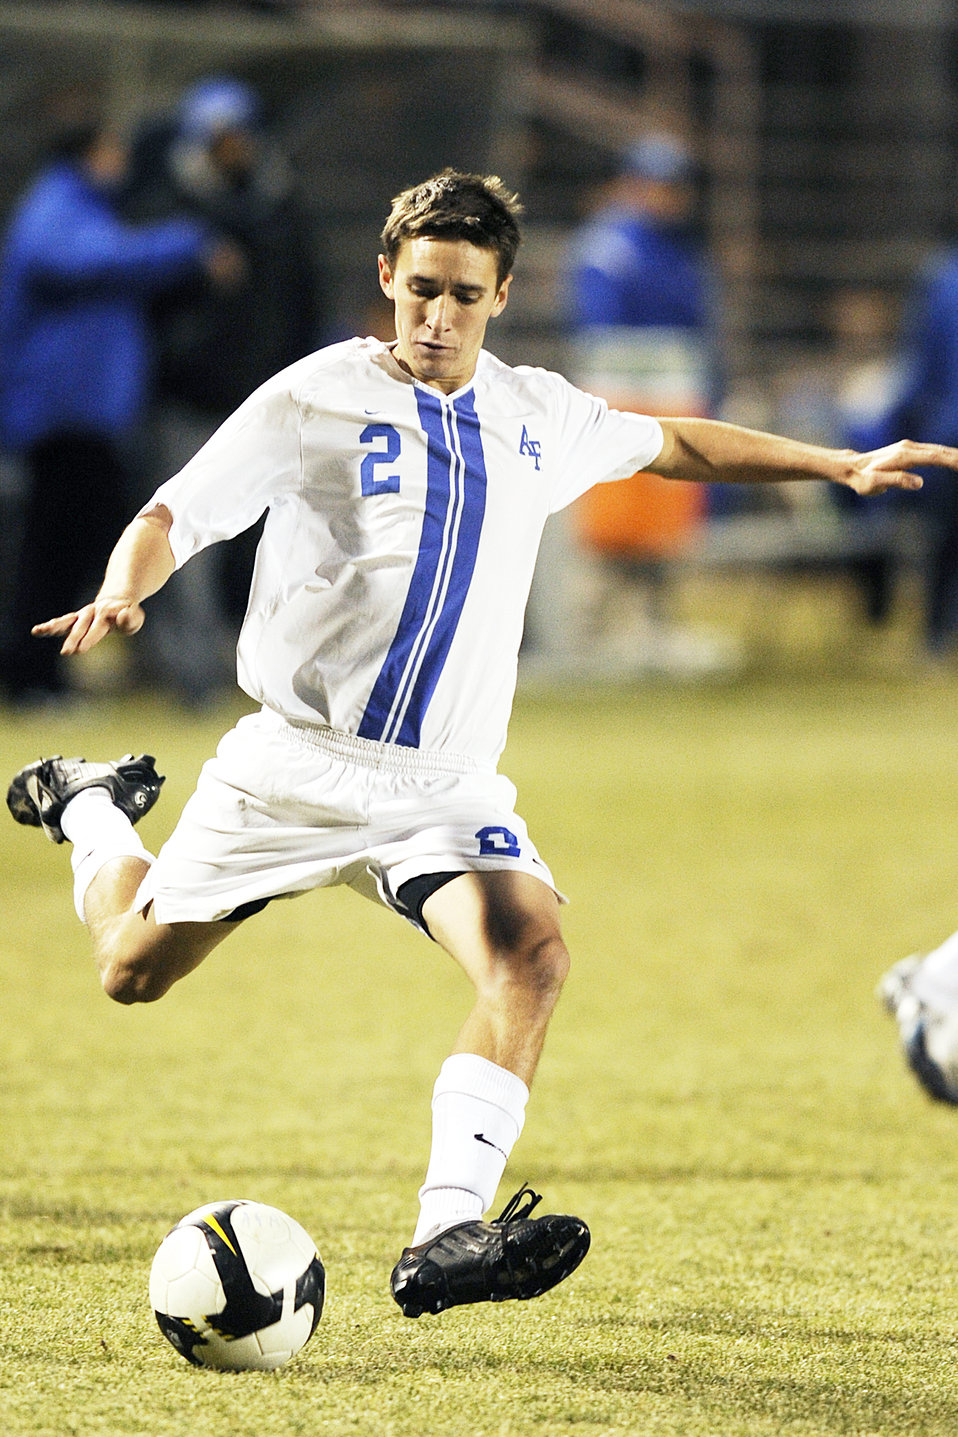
Air Force Academy

U.S. Air Force Academy, CO -- Junior mid-fielder Kyle Moses passes during action against the University of Denver at the Cadet Soccer Stadium Nov 7. Denver defeated the Falcons 2-0 in the regular-season finale for both teams. The Falcons fell to 7-8-1, and 2-5 in league play. The two teams will meet again in five days in the first round of the MPSF tournament on Nov 12 at the University of Denver Stadium. Air Force finished the season with a 5-1-1 record at home, and honored its seven seniors in a pre-game ceremony celebrating the final home game of their career.